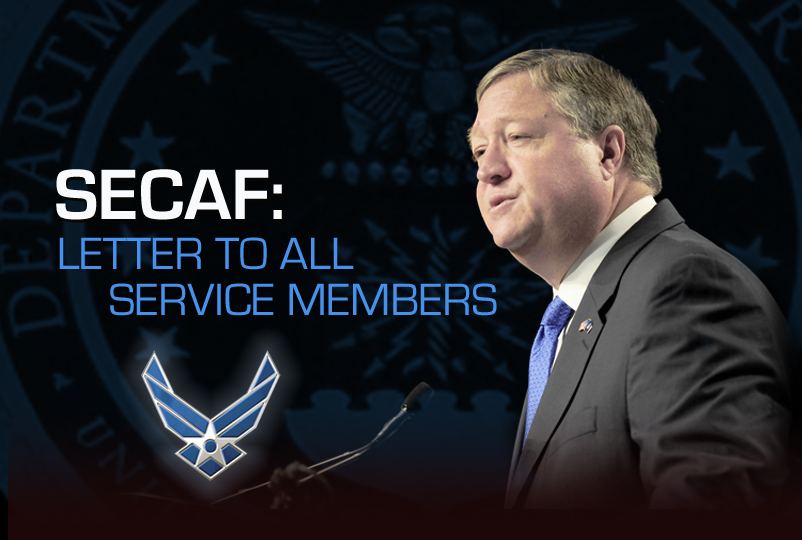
SECAF: Letter to all service members